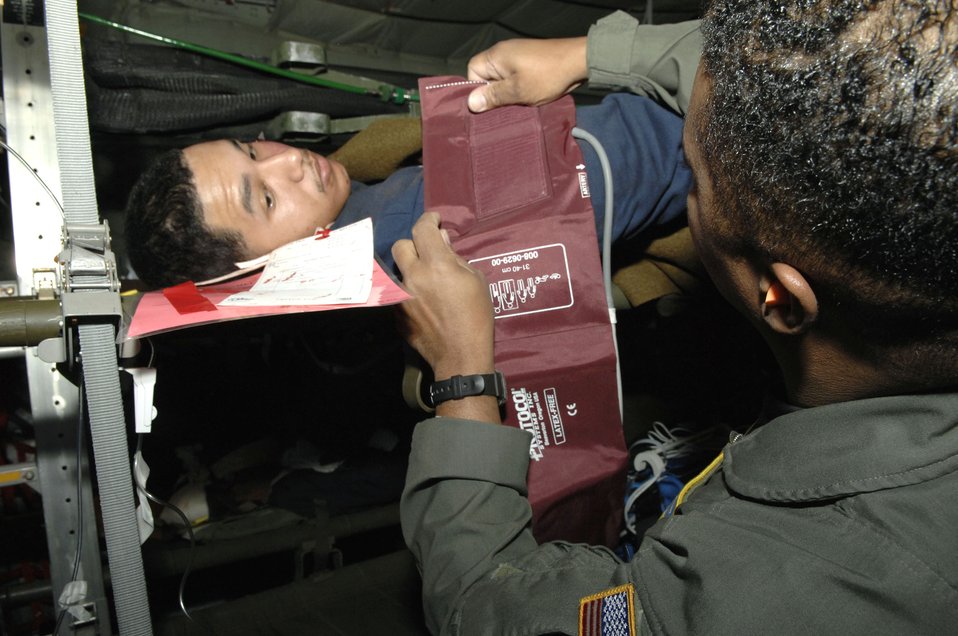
CMAX/Collaborative Multi-Agency Exercise

Airman 1st Class Justin Vargas, a